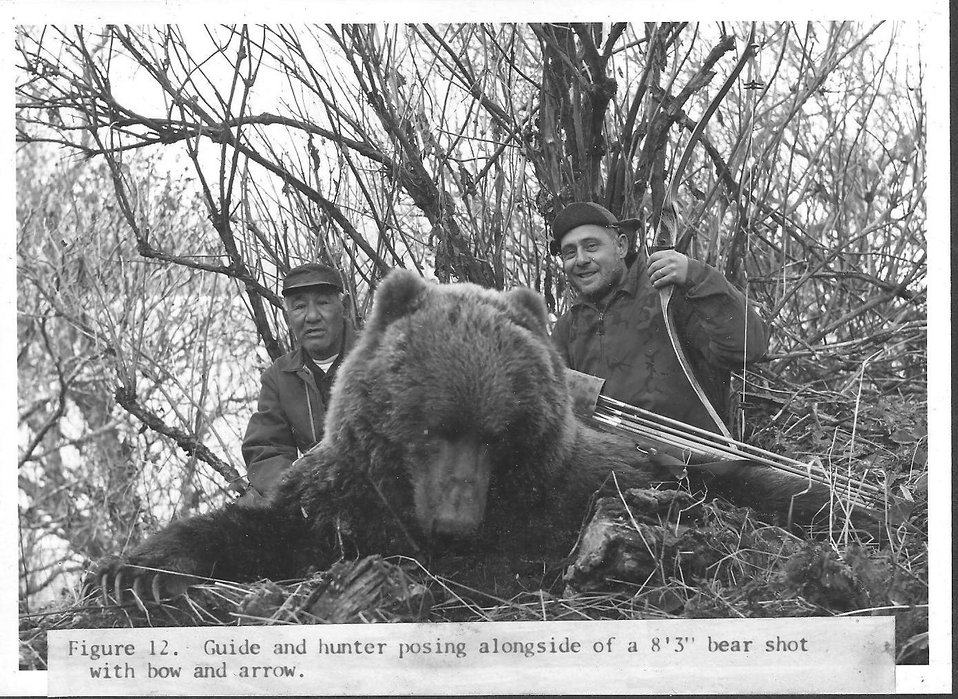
(1965) Big Bow and Arrow Bear

Credit: USFWS

Source and Contact: Kodiak National Wildlife Refuge